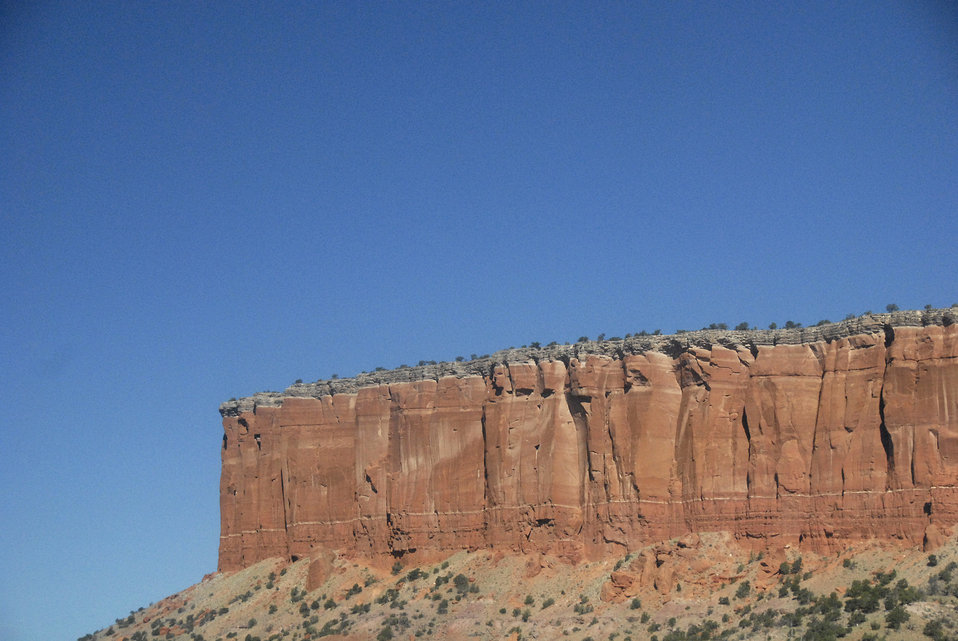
Impressive red rock formations were visible while traveling along interstate US 40 in New Mexico on September 9, 2008.